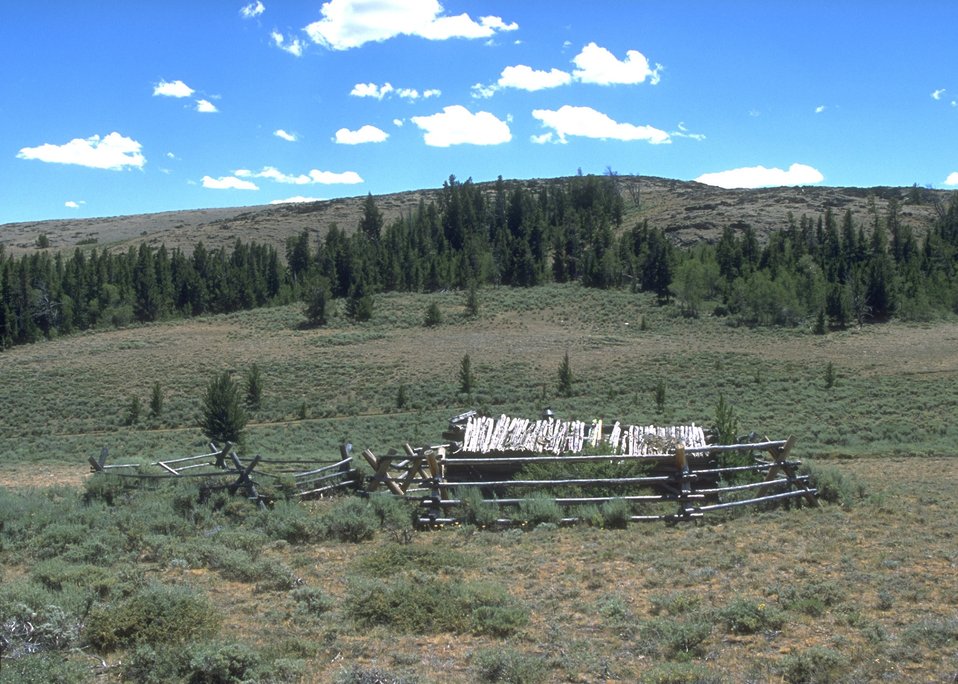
Cabin north of South Pass City along the Continental Divide Trail, Lander Field Office.